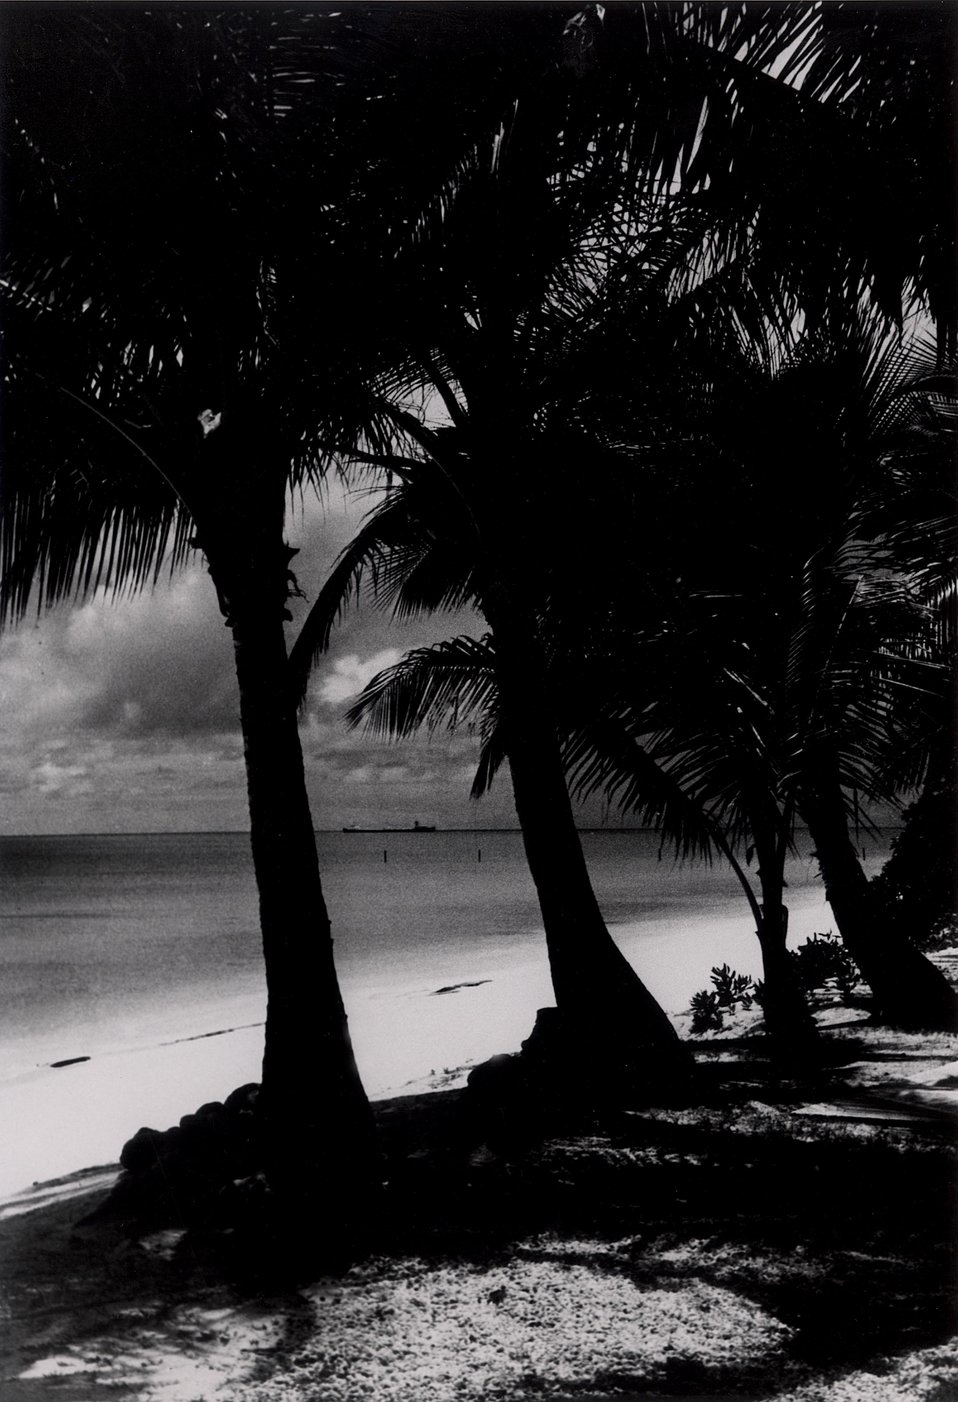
Six years after nuclear testing, scientists check the condition of Bikini and Eniwetok Atolls, August 1964.